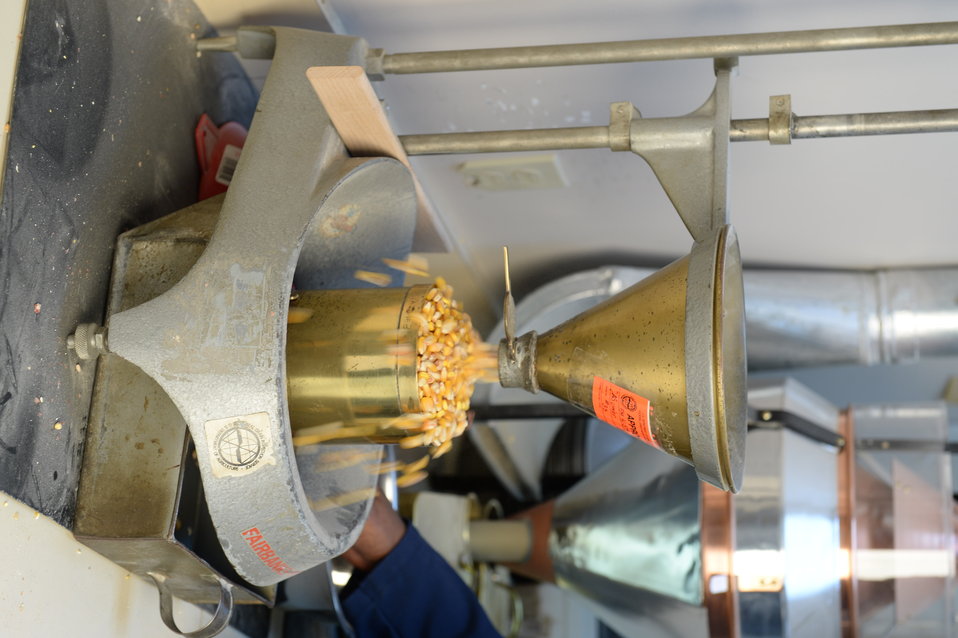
A U.S. Department of Agriculture (USDA) Grain Inspection, Packers and Stockyards Administration (GIPSA) Federal Grain Inspection Service (FGIS) scientist tests corn at the FGIS inspection laboratory in New Orleans, LA on Monday, Nov. 18, 2013.